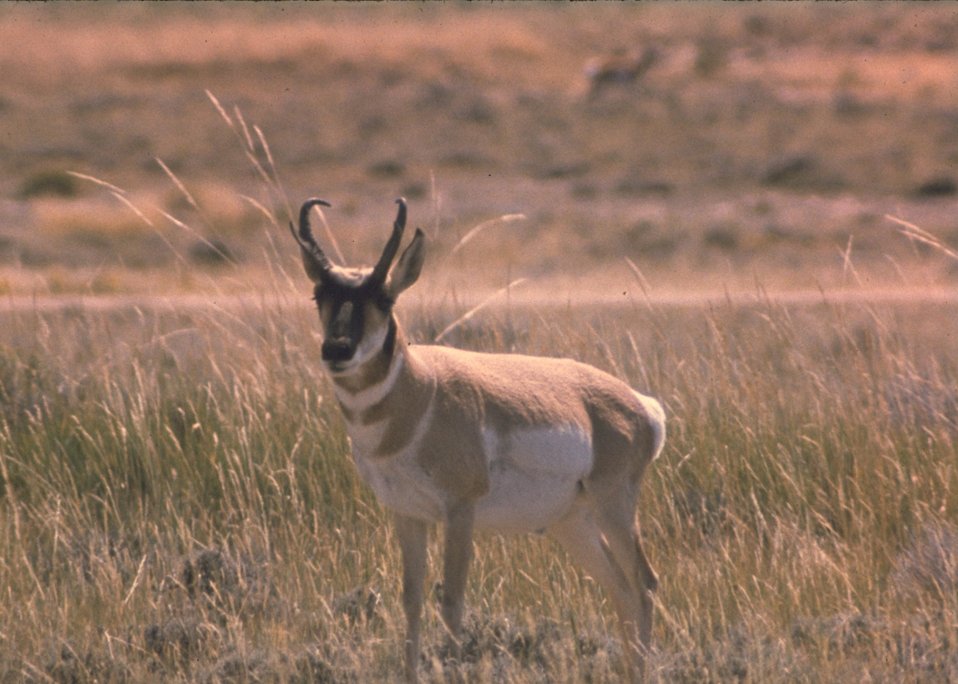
A buck Antelope.